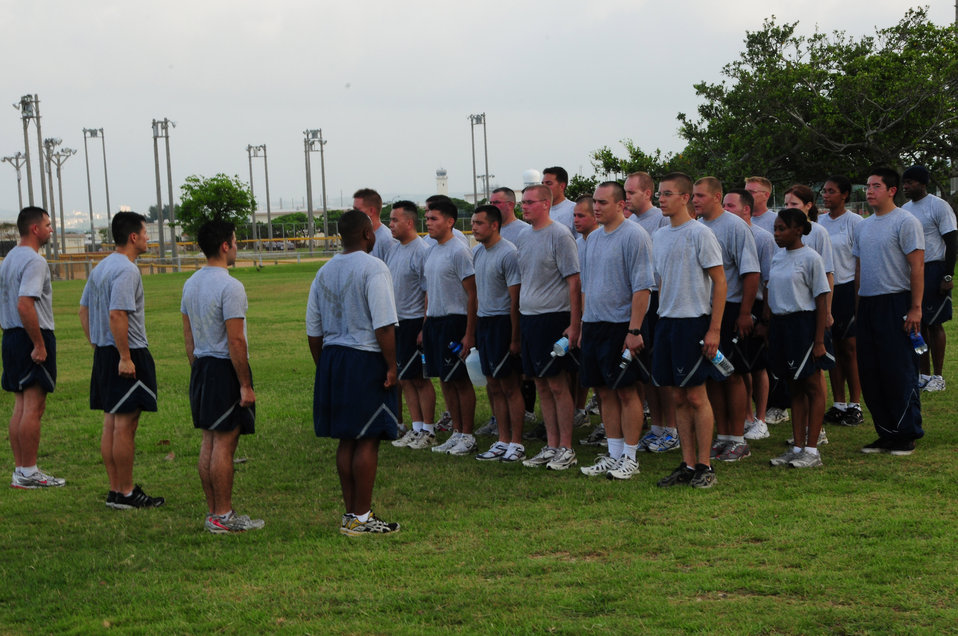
Bringing it back to basics

Members of the vehicle maintenance flight of the 18th Logistics Readiness Squadron stand in formation and recite the Airman's Creed after their physical training Sept. 16, 2009, at Kadena Air Base, Japan. To complete the future goals for their PT program, they have incorporated interval and circuit training.